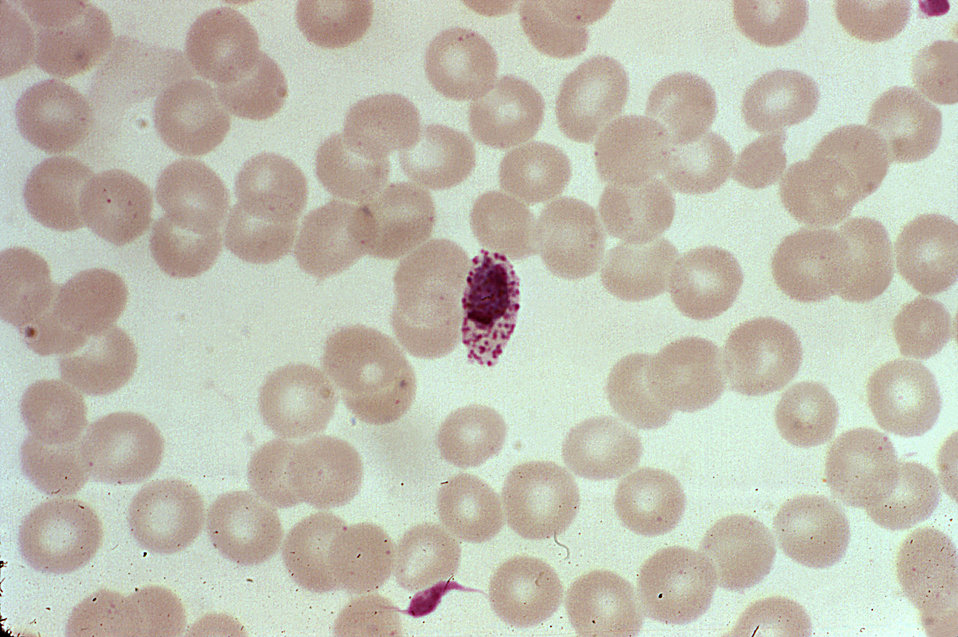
This photomicrograph depicts a young immature Plasmodium ovale schizont.